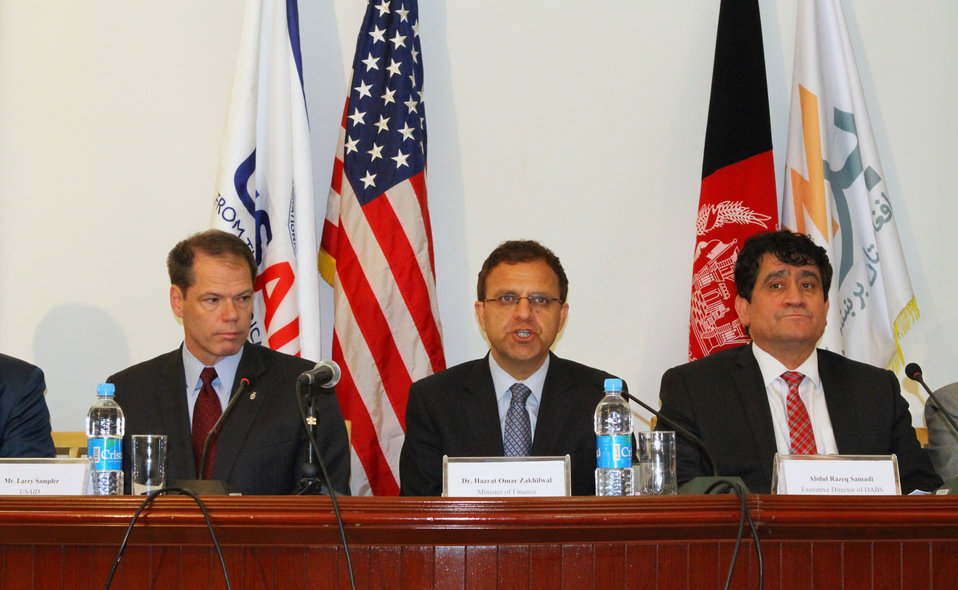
(L-R) USAID Assistant to the Administrator for Afghanistan and Pakistan Affairs Larry Sampler, Afghan Finance Minister Omar Zakhilwal and DABS CEO Abdul Razique Samadi attend contract signing ceremony in Kabul.